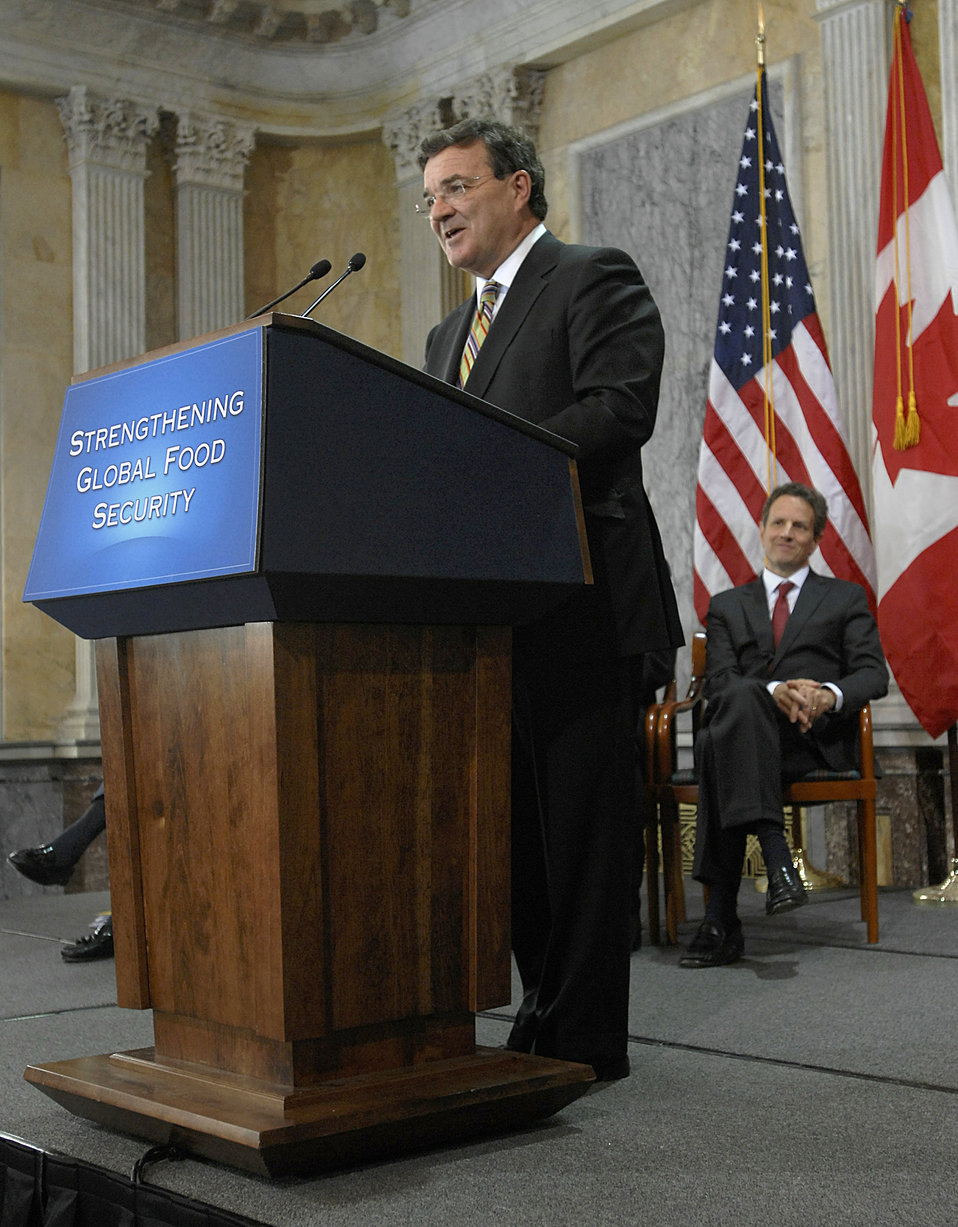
Announcement on International Commitment to Fight Global Hunger and Poverty, 4/22/2010

James Flaherty, Canadian Minister of Finance, at the announcement of international commitment to fight global hunger and poverty at the Treasury Department April 22, 2010.